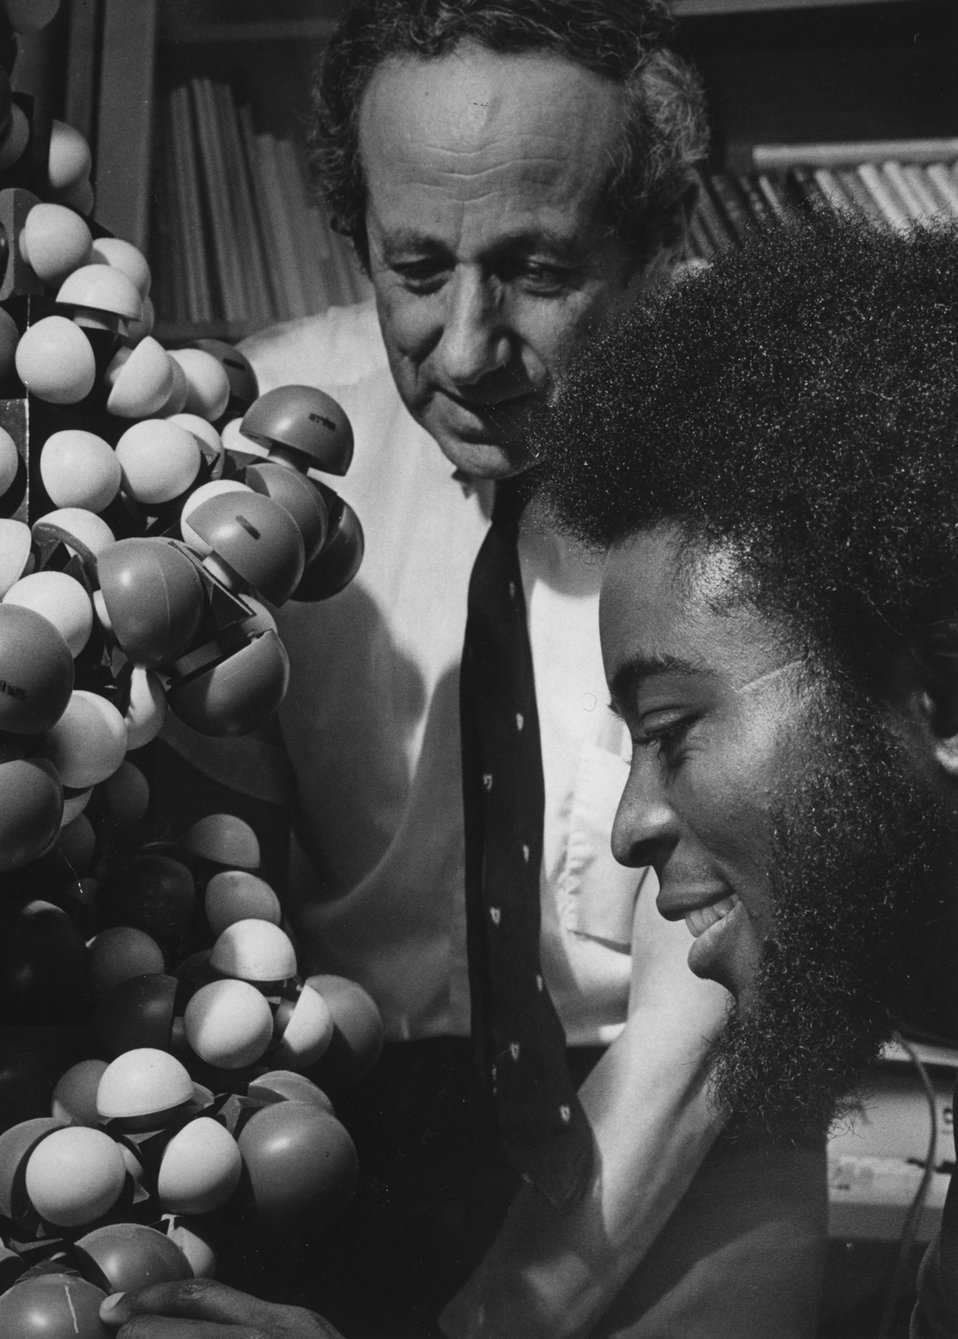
DNA model is explained to student by a member of the Brookhaven National Lab's medical dept. June 21, 1974